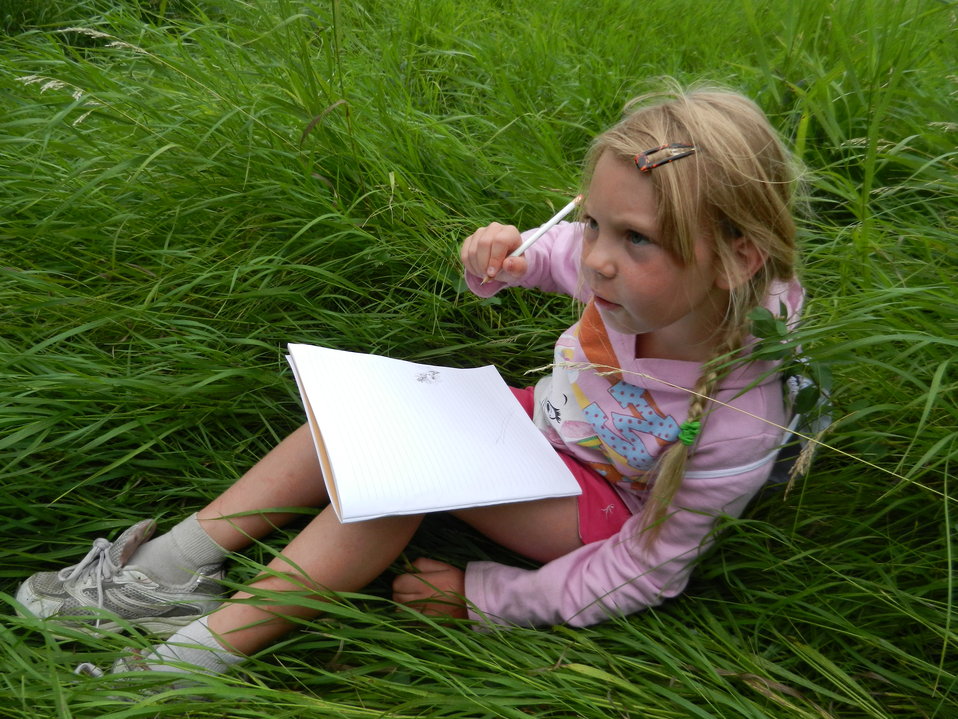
Young Girl Journaling

Very intently studying the bird nest she spotted to draw in her Nature Journal while on a hike at the Des Lacs National Wildlife Refuge in North Dakota.